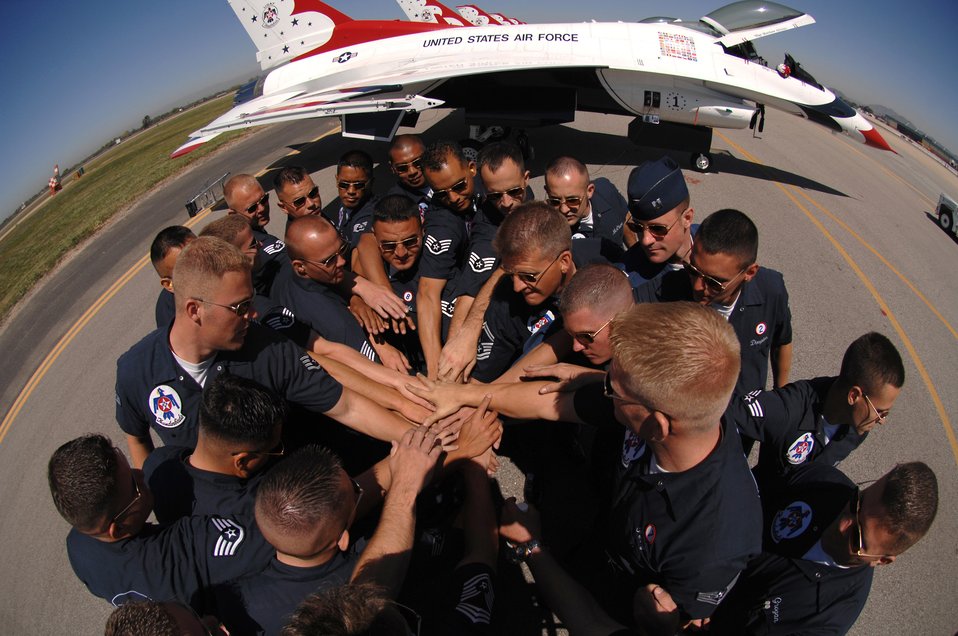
Bring it in

Air Force Thunderbird maintainers bring it in for a cheer after completing pre-flight checks March 30 prior to a Thunderbird practice show at Naval Base Ventura County, Point Mugu, Calif.